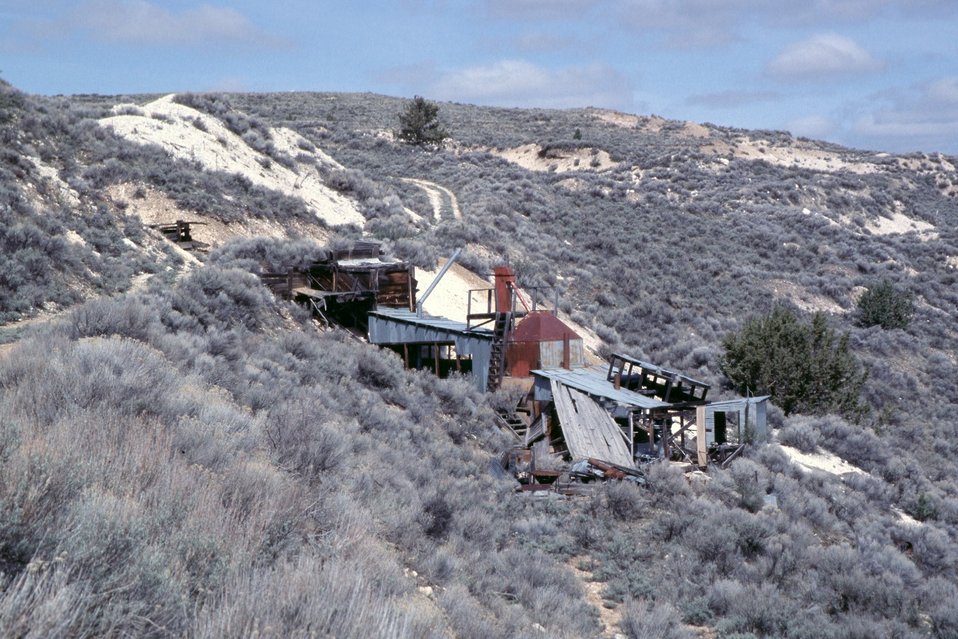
AML Glass Buttes, G4, Burns District. This mill/retort produced 87 flasks of mercury in 1957. Ore was dropped into a hopper on the left side of the photo. It was then crushed in the low metal building. It was heated in a retort in the red building. The tin-roofed room in the right part of the photo held tools..